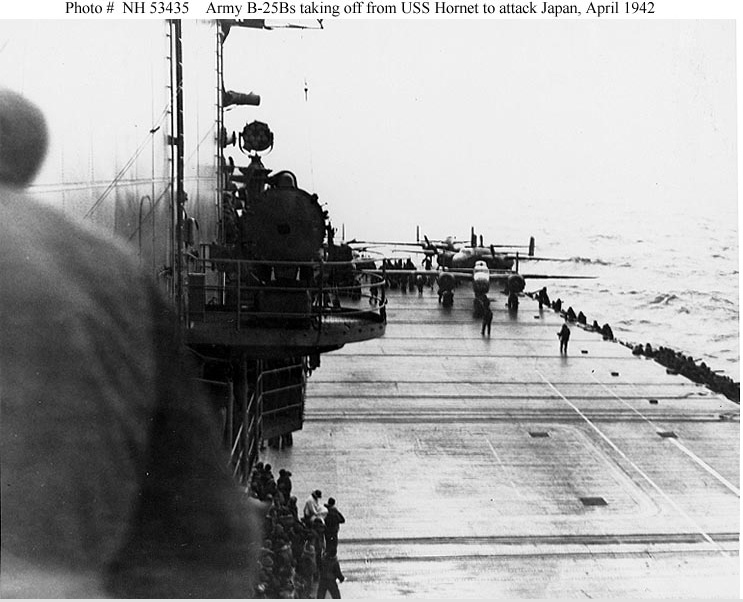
Doolittle Raid

U.S. Army Air Forces B-25B bombers prepare to take off from USS Hornet (CV-8), on the morning of April 18, 1942. These are the last five or six planes to be launched.